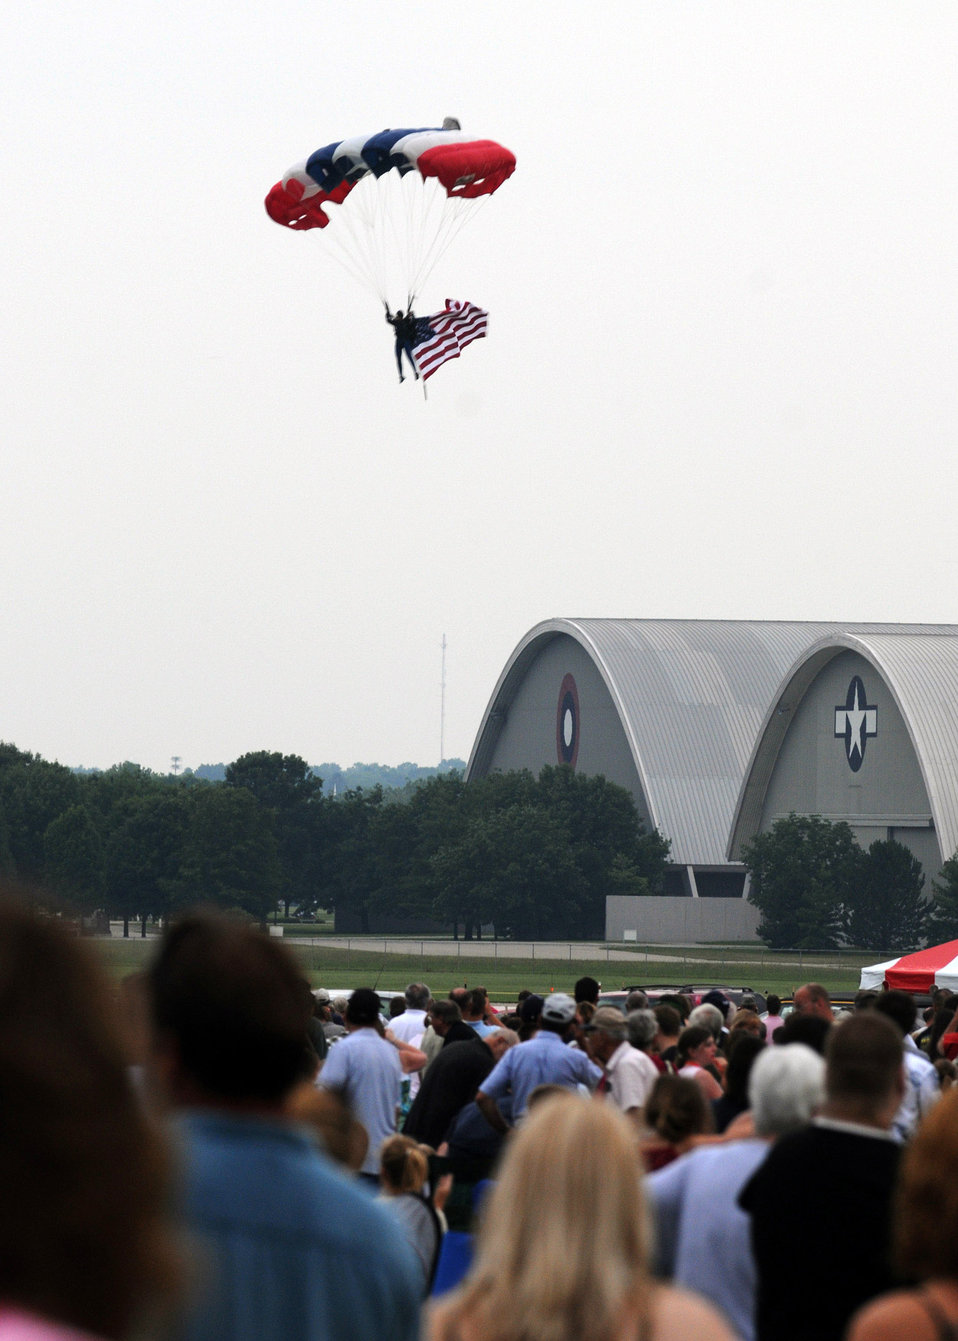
Freedom call

A parachutist prepares to land after jumping with the American flag during the playing of the national anthem during the 4th annual Freedom's Call Tattoo June 27 on the grounds of the National Museum of the U.S. Air Force in Dayton, Ohio. More than 75,000 peole came out for the event that consisted of aircraft fly overs, food and music by the Air Force Band of Flight, Charlie Daniels Band and local performers.